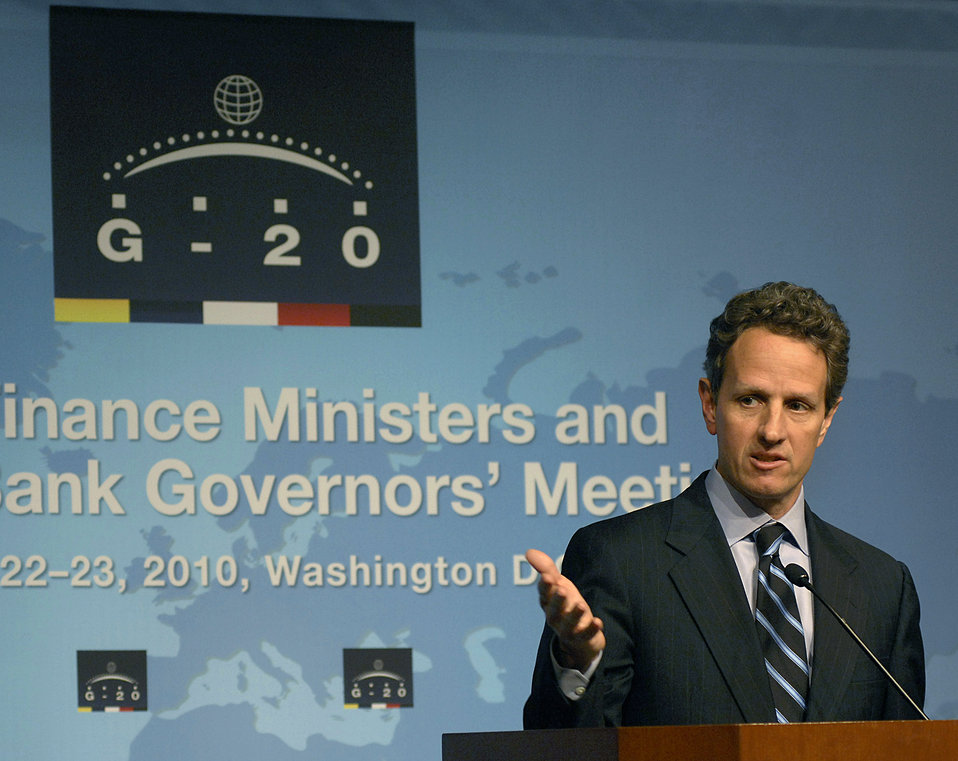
G-20 Press Conference, 4/23/10

On April 23, 2010, Secretary Geithner held a press conference at the conclusion of the G-20 Meeting of Finance Ministers at the IMF.